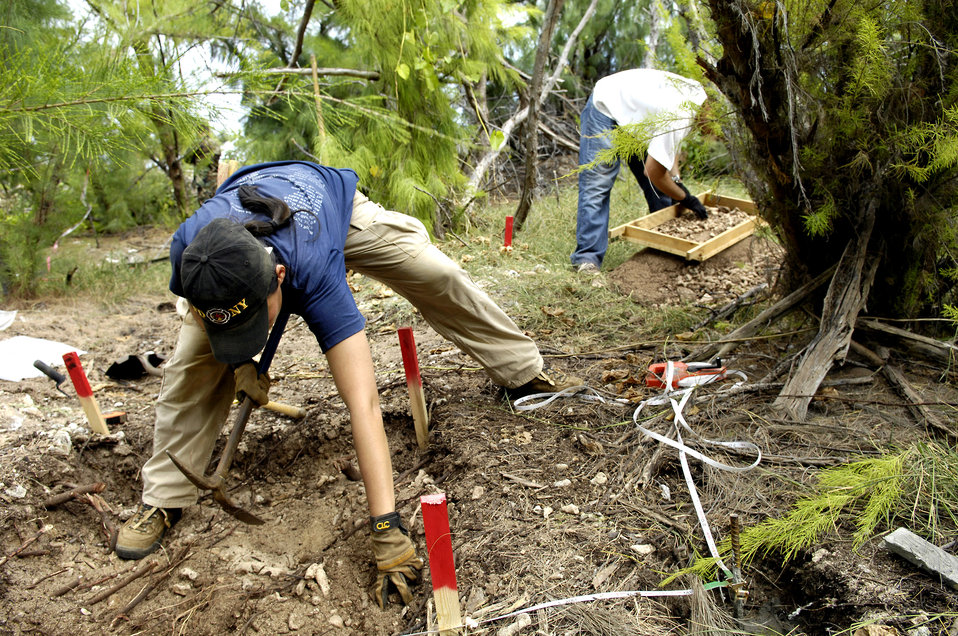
Servicemembers search for POW/MIAs on Wake Island

Denise To and Greg Berg excavate a dig site Jan. 12 on Wake Island. Ms. To and Mr. Berg, forensic anthropologists, were sent to do a site survey after Wake Island officials notified the Joint POW/MIA Accounting Command of bones located on the island. JPAC officials are charged with achieving the fullest possible accounting of all Americans missing as a result of past conflicts.